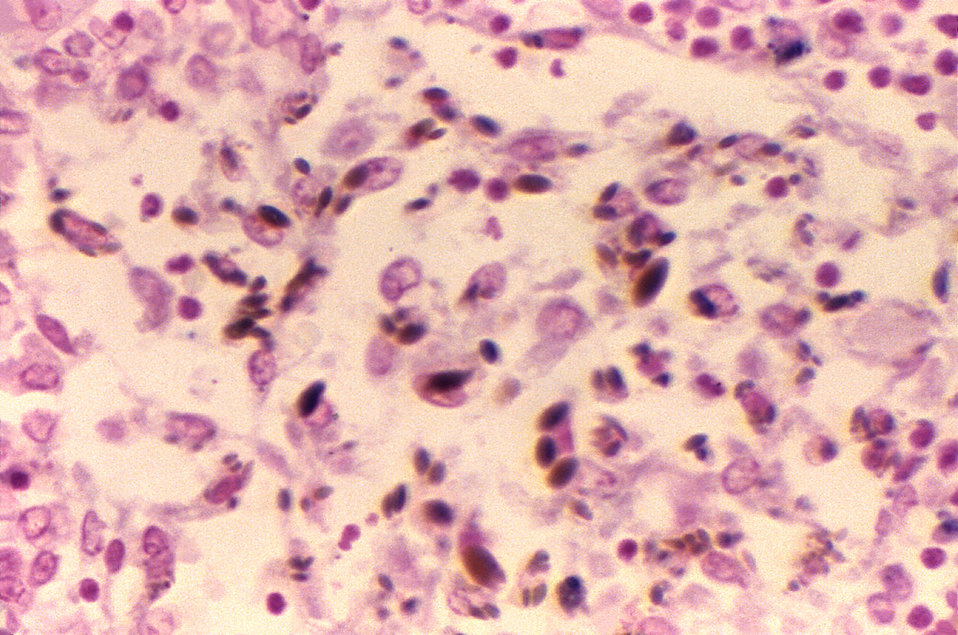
Hamazaki-Wesenberg bodies, lymph node